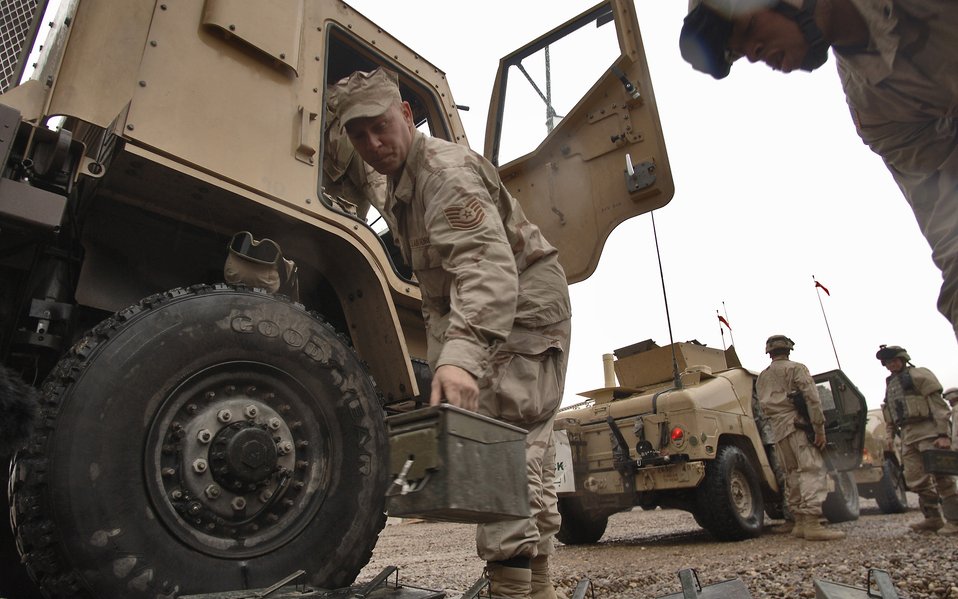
4 million miles

BALAD AIR BASE, Iraq (AFPN) -- Tech. Sgt. David Freid unloads boxes containing hundreds of 50-caliber ammunition rounds from an armor-modified vehicle. He and a team of Airmen and Soldiers completed a convoy security mission that achieved the unit's 4-million mile mark Jan. 7. Sergeant Freid is a truck commander with the 732nd Expeditionary Logistics Readiness Squadron and is deployed from Langley Air Force Base, Va.